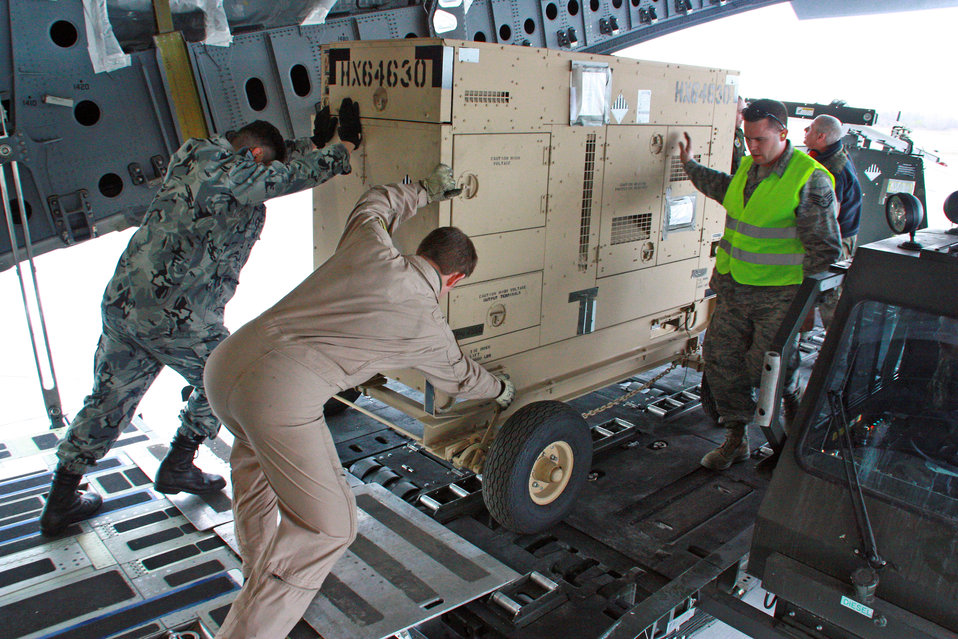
Heavy Airlift Wing

Airmen from the multinational Heavy Airlift Wing move equipment March 30, 2010, in preparation for shipment to units in Afghanistan. HAW Airmen have moved more than 2.1 million pounds of war reserve material essential to surge operations supporting the International Security Assistance Force in Afghanistan. The HAW, based at Papa Air Base, Hungary, operates three C-17 Globemaster III aircraft independently of NATO's military command and comprises 12 nations that activated the unit July 27, 2009.